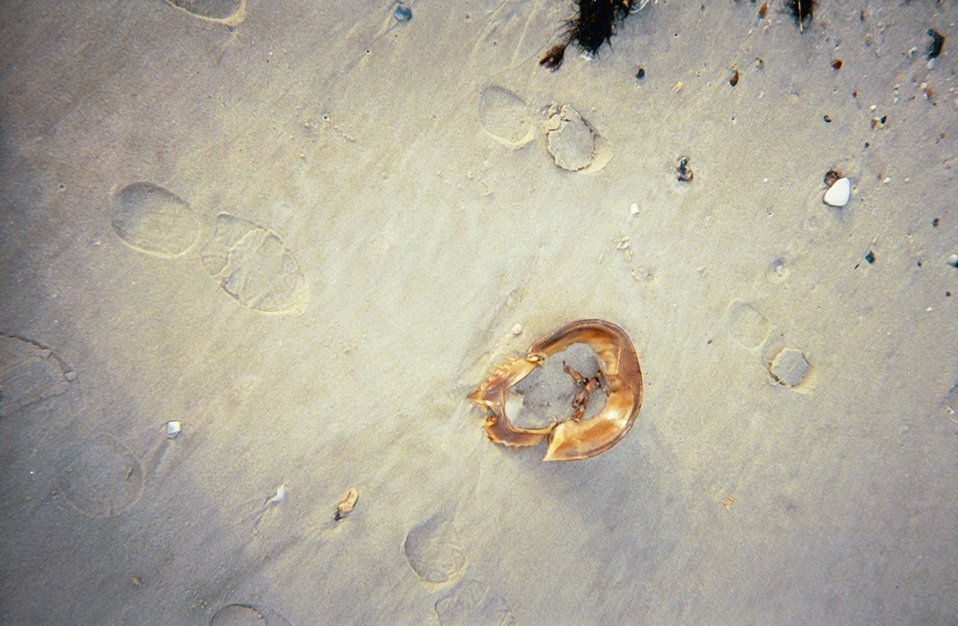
Footprints and a horseshoe crab shell.